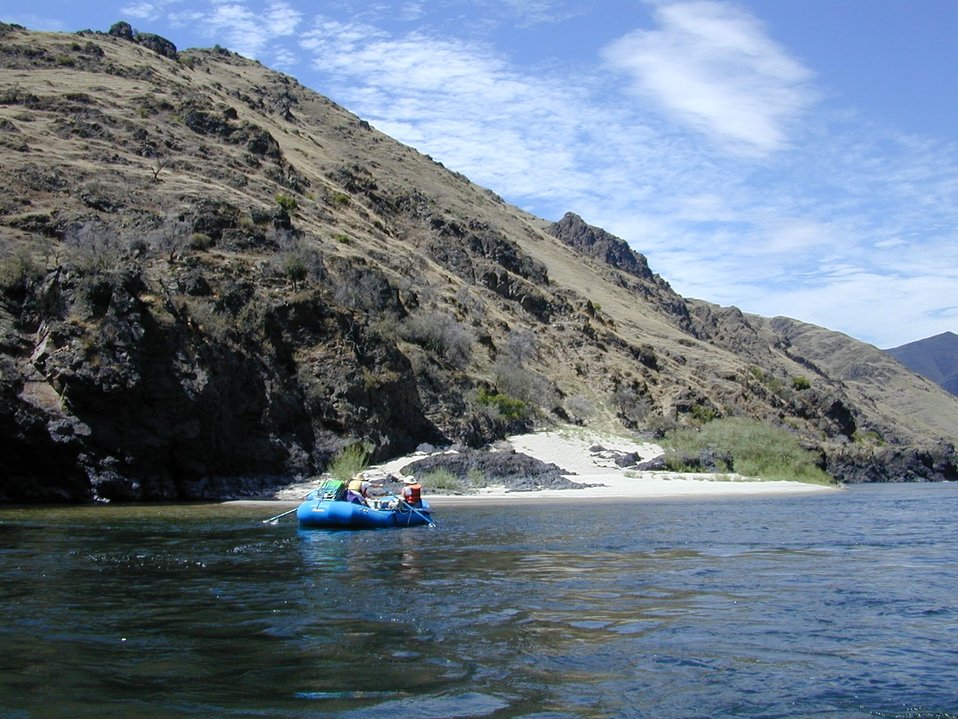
Recreation Rafting on Lower Salmon River Cottonwood Field Office UCSC Upper Columbia Salmon Clearwater District